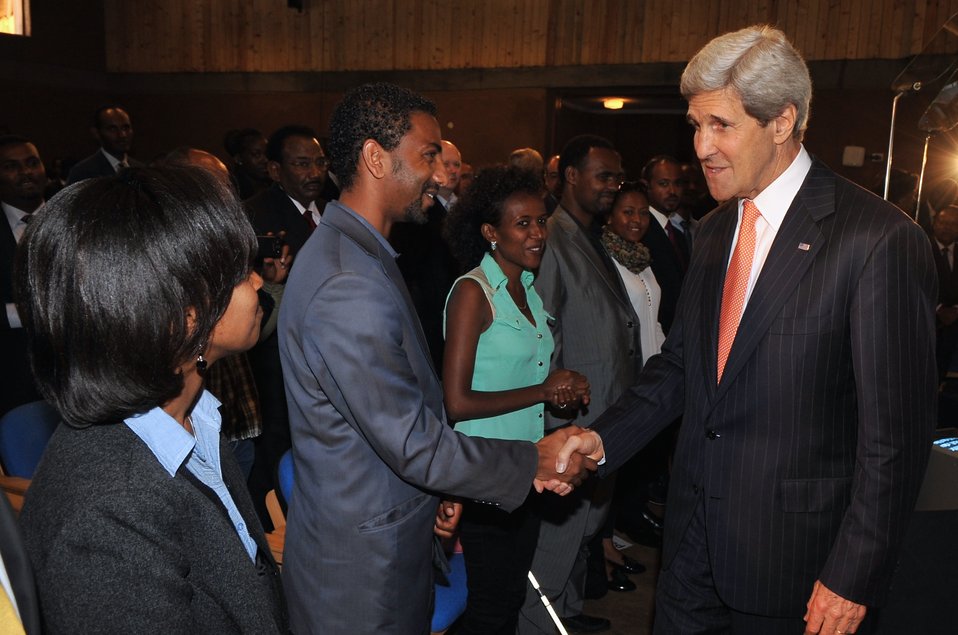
Secretary Kerry Bids Farewell to Audience Following Africa Policy Speech

U.S. Secretary of State John Kerry bids farewell to audience members after delivering a speech about Africa policy in a botanical garden outside Addis Ababa, Ethiopia, on May 3, 2014.